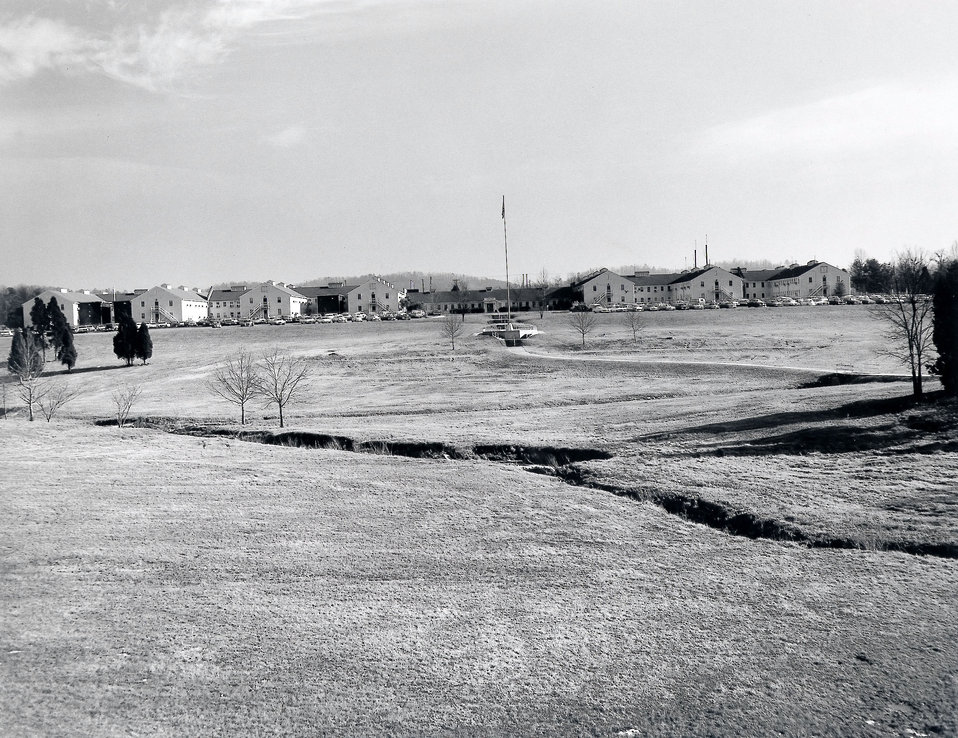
AEC Adm Proped Site for New Bldg. Oak Ridge

65-54 DOE photo Ed Westcott 6-15-1965 Oak Ridge Tennessee